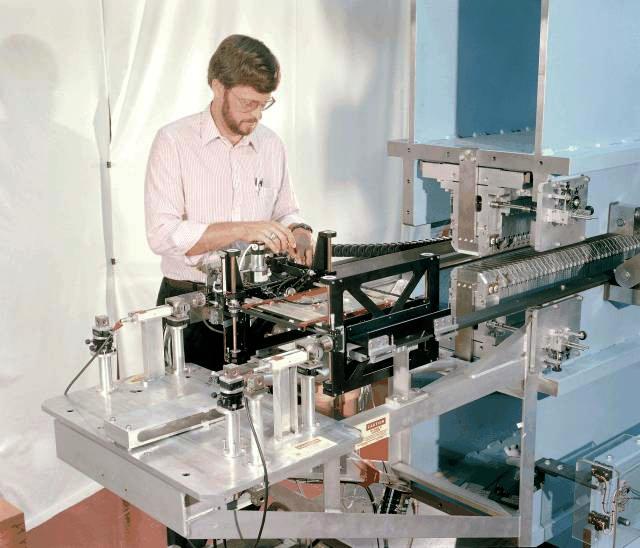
LBNL SCIENTIST WORKING AT THE LUGE, A HIGH-SPEED, PRECISION MAGNETIC MEASUREMENT SYSTEM.

TO MEASURE THE MAGNETIC FIELD OF AN INSERTION DEVICE, THE SCIENTISTS AT THE ADVANCED LIGHT SOURCE DESIGNED AND BUILT A HIGH SPEED PRECISION MAGNETIC MEASUREMENT SYSTEM. THE SYSTEM IS CAPABLE OF TAKING 2500 MEASUREMENTS DURING ONE PASS THROUGH THE INSERTION DEVICE IN UNDER ONE MINUTE.